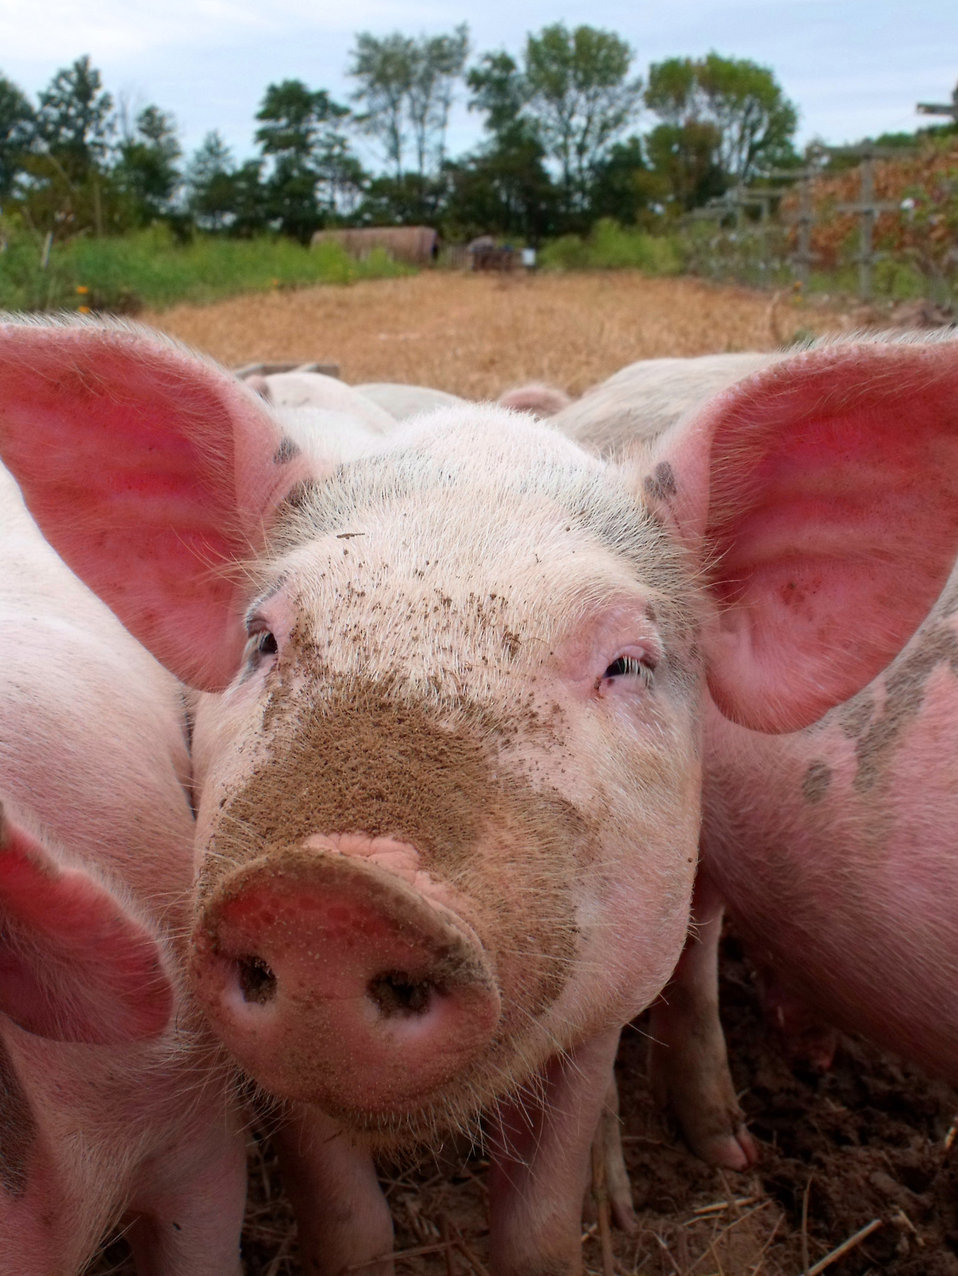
Pigs field farm.